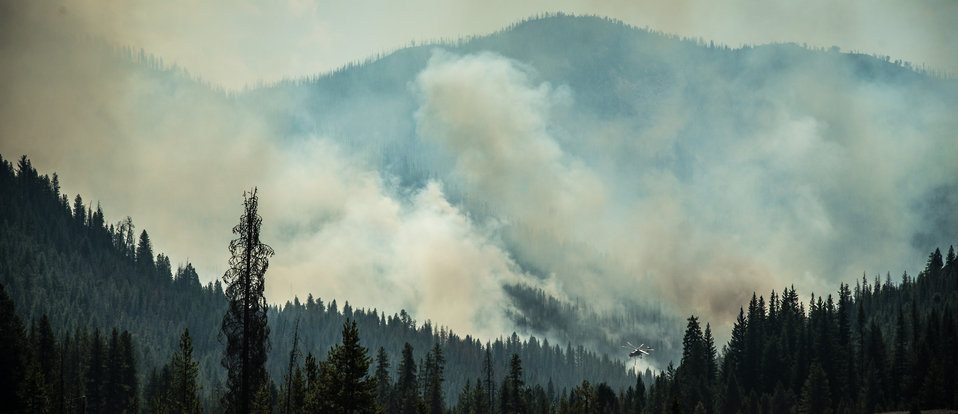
An Erickson Air-Crane's 'Helitanker 737' Skycrane climbs into the sky after using a hose pump to fill it triangular shaped tank with water from the East Fork of Baker Creek, to fight the Beaver Creek Fire, northwest of Hailey, ID, on Tuesday, Aug 20, 2013. The S-64F Aircrane Helicopter serves as a Type-1 Helitanker. The specialized aircraft is designed specifically for lifting. It's two turbine engines develop a maximum total of 9,600 SHP that turns a 72 foot main rotor, lifting a maximum hook weight of 25,000 lbs. For firefighting purposes, the designed weight of the loaded Fire Tank with water, is less than it's maximum load, to provide better flight performance in mountainous terrain.